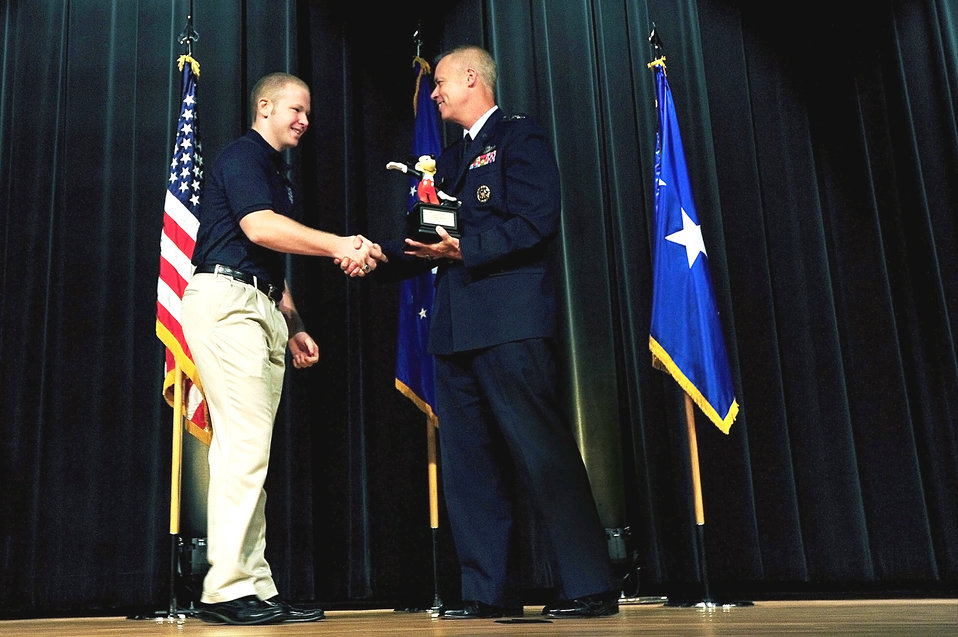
ANG Youth of the Year 2010

Dakota Johnson (left) shakes hands with Lt. Gen. Richard Newton while being recognized as the Air National Guard's Youth of the Year as part of the 2010 Air Force Youth of the Year awards program during a ceremony June 24, 2010, at the Pentagon. The program, in partnership with the Boys and Girls Clubs of America, recognizes young people from each Air Force major command who have taken on leadership roles in their community while achieving academic and other success. General Newton is the deputy chief of staff for manpower and personnel at U.S. Air Force Headquarters.